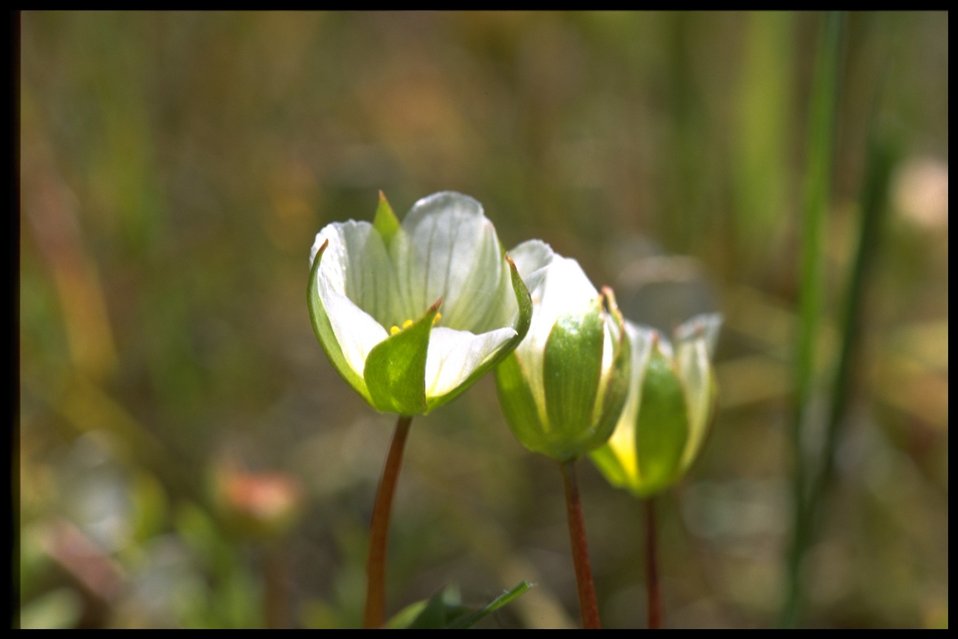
Closeup shot of wildflower (genus Limnanthes).